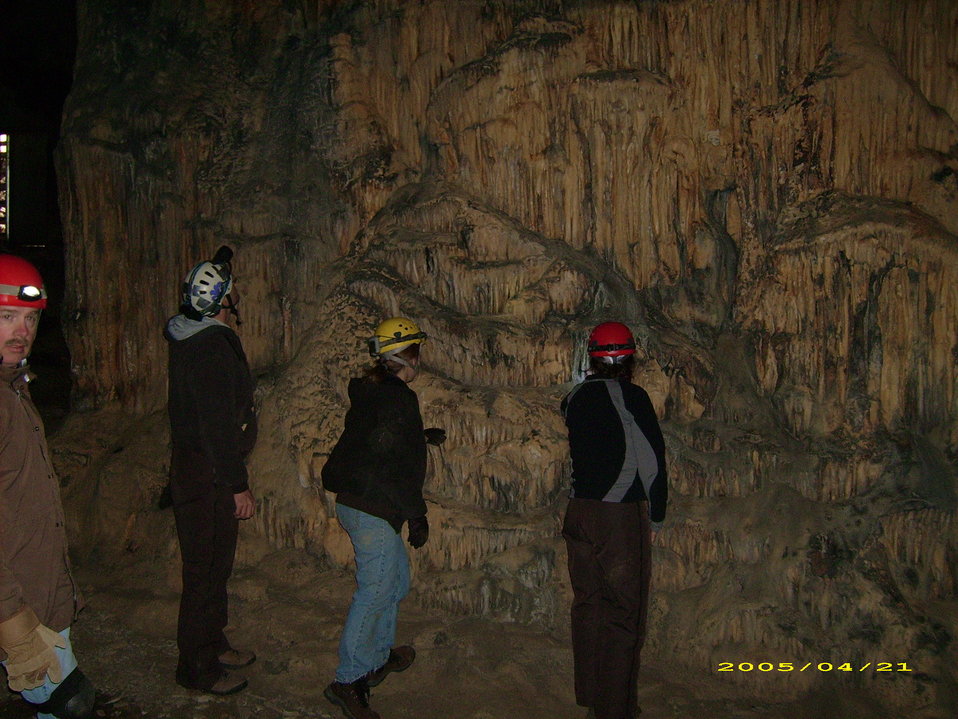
Biologist viewing formation at Madison Saltpeter Cave

Group of USFWS biologists looking at cave formation in Madison Saltpeter Cave.